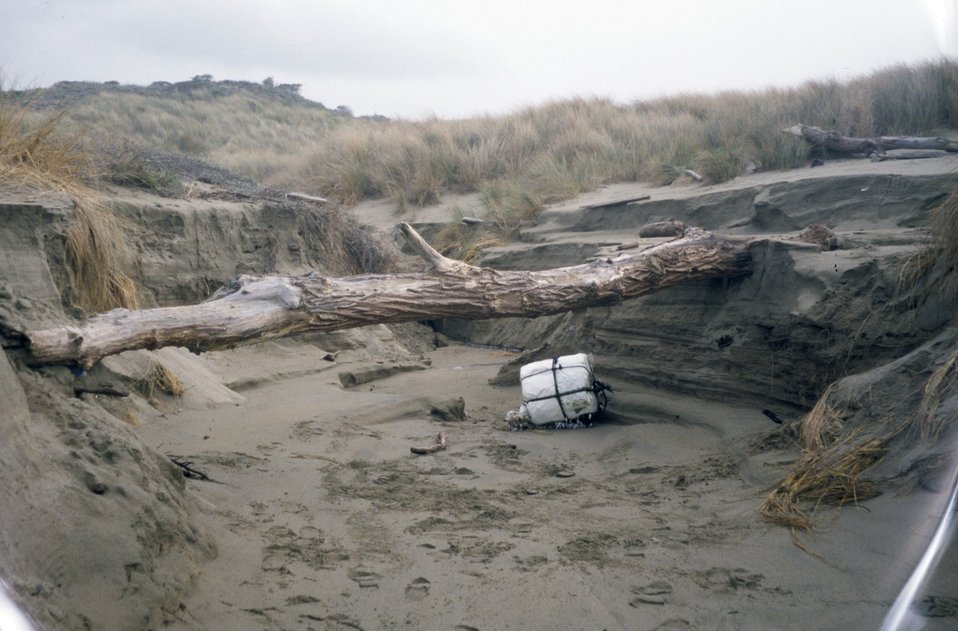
Point Reyes Great Beach. Marine debris with plastic wrapping washed far above the tide line.